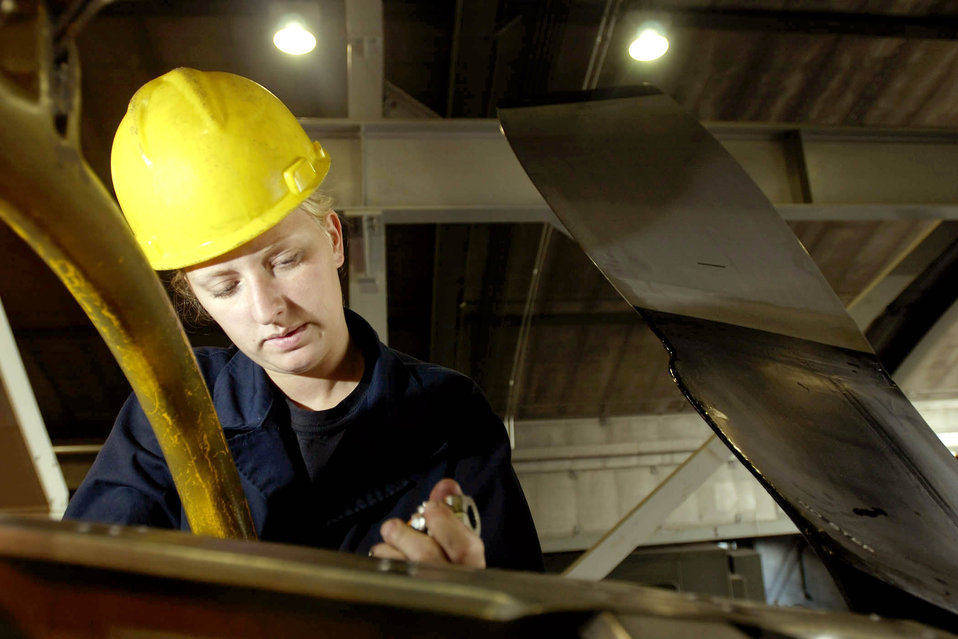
Hush, hush

RAMSTEIN AIR BASE, Germany -- Senior Airman Amanda Shetley prepares a C-130 Hercules engine for an operations test in the hush house here. The hush house was originally made for conducting engine tests for the F-16 Fighting Falcon. The 86th Maintenance Squadron's propulsion flight is a centralized intermediate repair facility making it the focal point for any C-130 engines needing repairs in Europe or for operations Iraqi Freedom and Enduring Freedom.